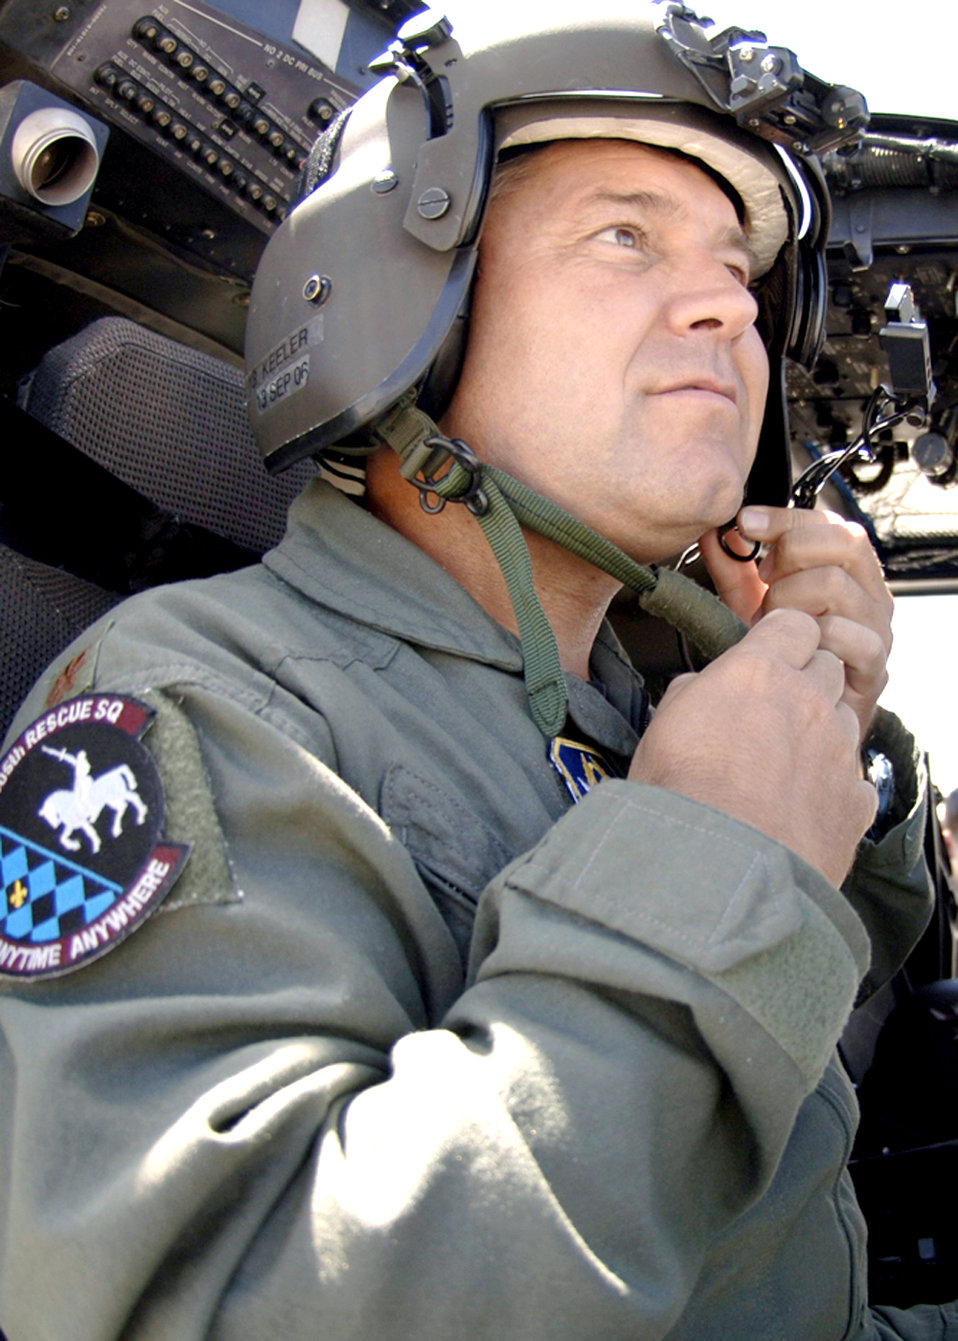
Pave Hawk testing

Maj. John Keeler gets his gear ready as he prepares to take off in an HH-60 Pave Hawk at Davis-Monthan Air Force Base, Ariz., for a test flight on July 10. Major Keeler participated in a real-world rescue of an individual from a cargo ship off the coast of California on July 1. He is assigned to the Air Force Reserve Command's 943rd Rescue Squadron.